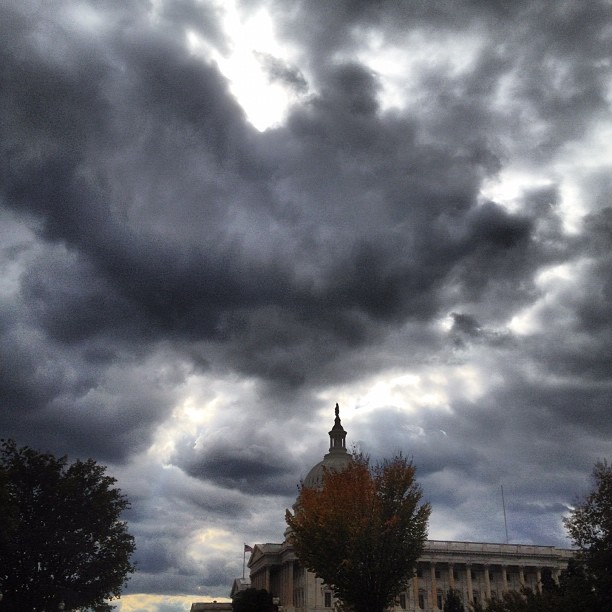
Windy November afternoon at the Capitol.